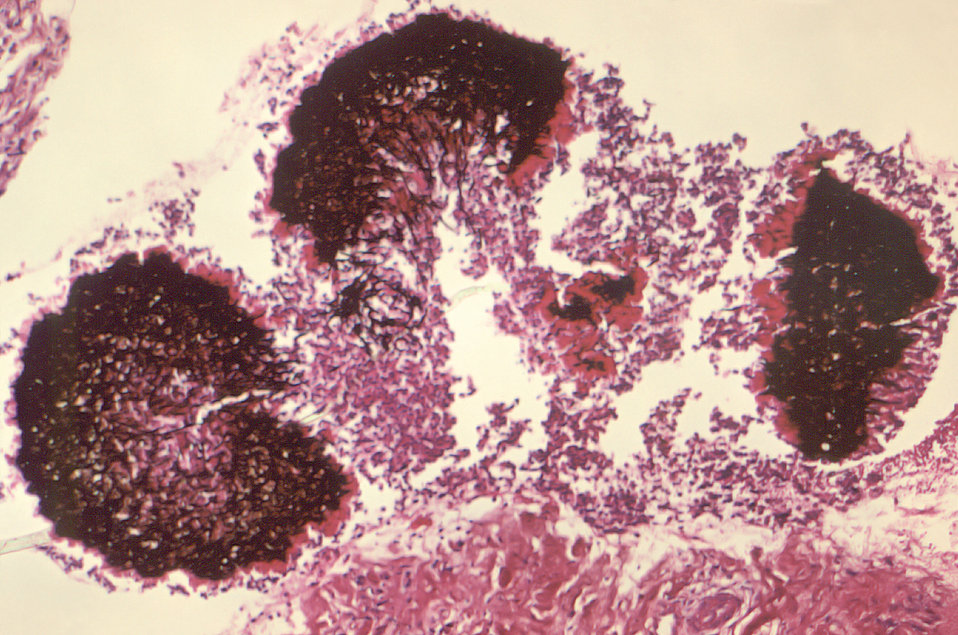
Magnified 100X, this photomicrograph revealed some of the histopathologic cytoarchitectural features exhibited by three granules of the fungus, Acremonium falciforme, found in this Gomeri and H&E-stained tissue sample.